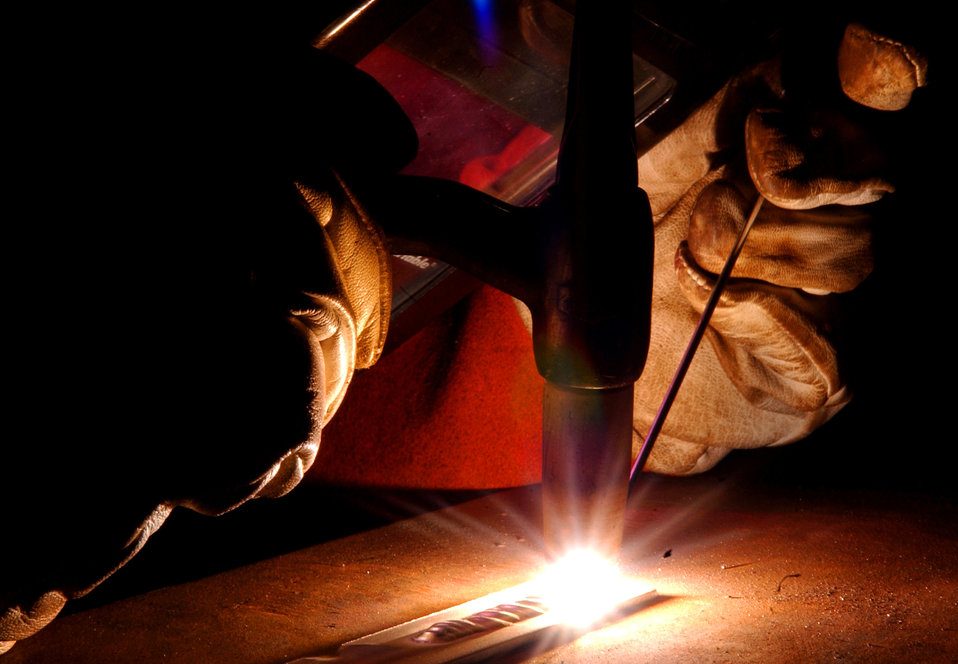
Merger provides Airmen chance to ?weld? new skills

Airmen and local nationals practice oxyacetylene welding June 4 at Kadena Air Base, Japan. The process uses fuel gases and oxygen to cut and weld metals. Personnel from vehicle mechanics and body shop are completing a newly implemented welding course at the Pacific Air Forces Transportation Training Center.